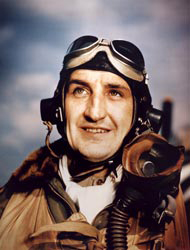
Col. Francis S. Gabreski

Col. Francis